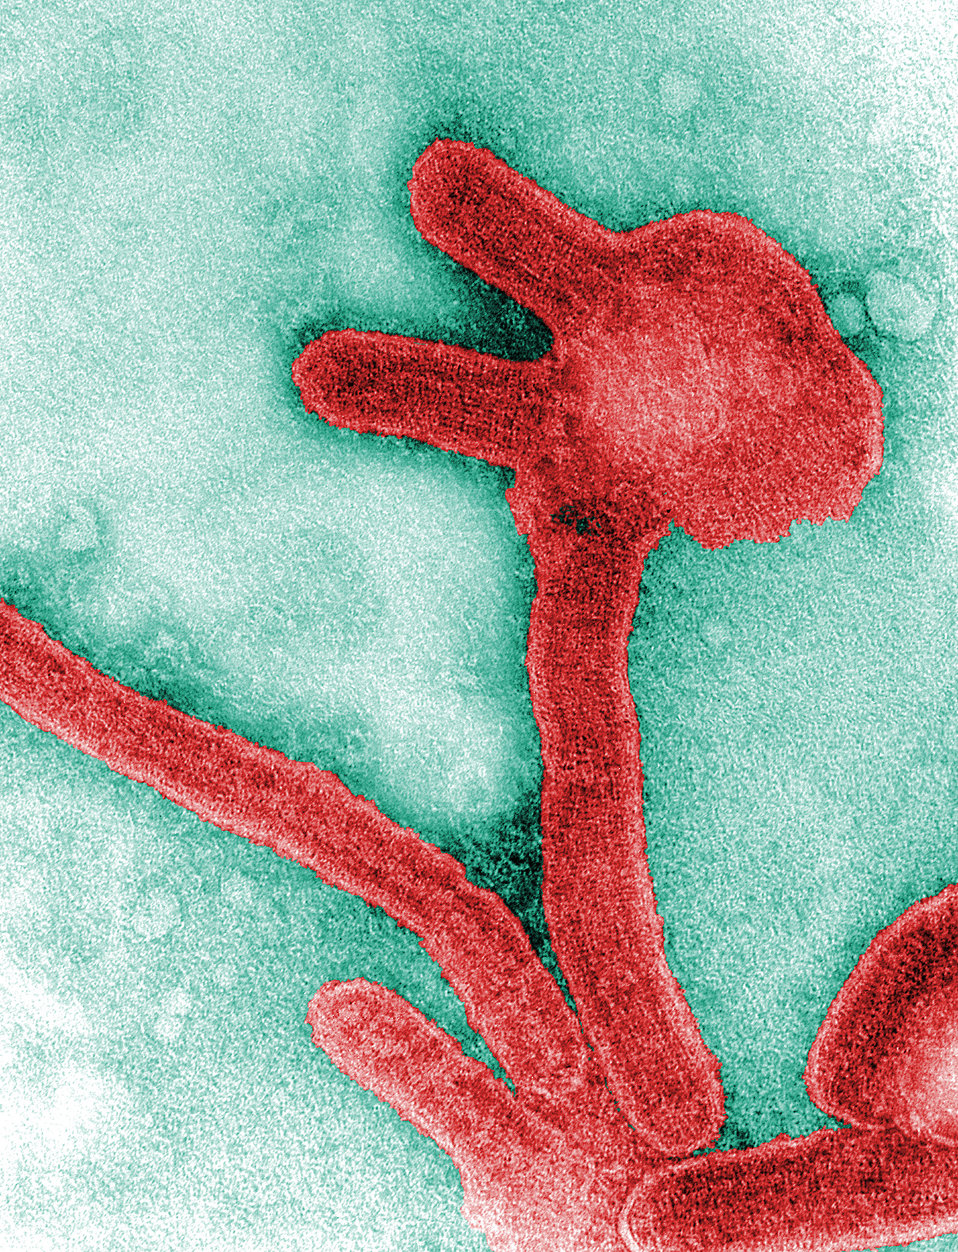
This colorized negative stained transmission electron micrograph (TEM), captured by F.A. Murphy in 1968, depicts a number of Marburg virus virions, which had been grown in an environment of tissue culture cells. Marburg hemorrhagic fever is a rare, severe type of hemorrhagic fever which affects both humans and non-human primates. Caused by a genetically unique zoonotic (that is, animal-borne) RNA virus of the filovirus family, its recognition led to the creation of this virus family. The four species of Ebola virus are the only other known members of the filovirus family. See PHIL 7218 for a black and white version of this image.